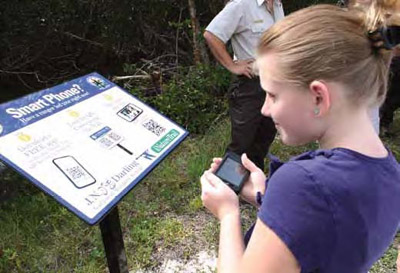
QR code user at Ding Darling Refuge

A visitor prepares her smartphone to scan quick response (QR) codes along the iNature Trail at J.N. “Ding” Darling National Wildlife Refuge in Florida. (Chelle Koster Walton)